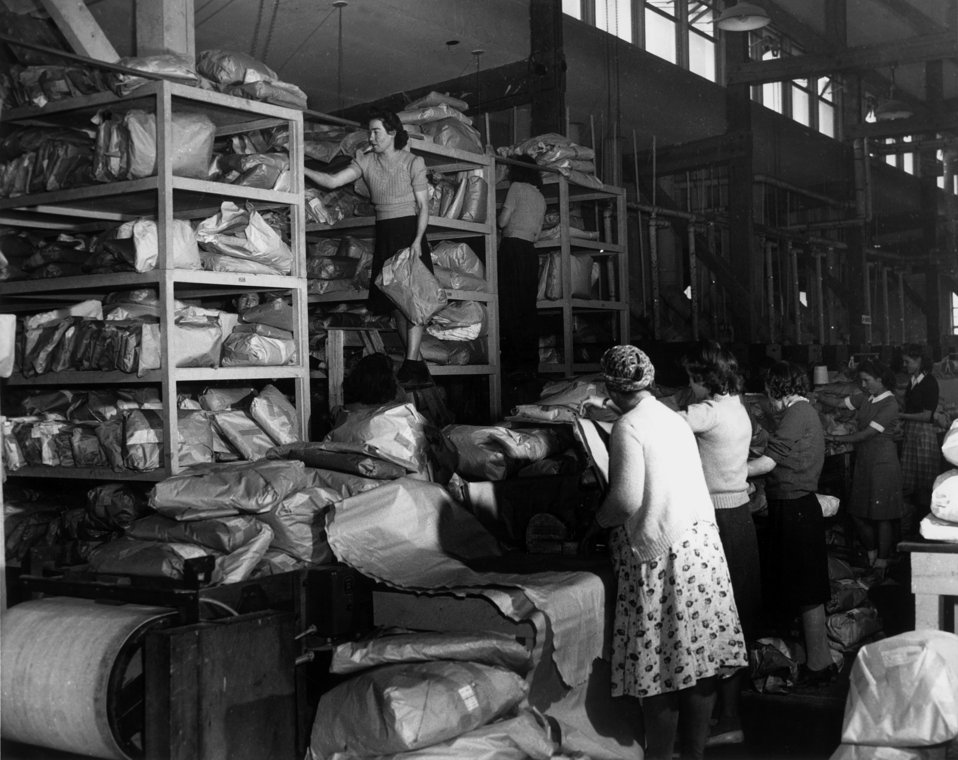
Laundry #2 Interior Oak Ridge

PRO206 DOE photo Ed Westcott

Laundry #2 Interior Oak Ridge Tennessee 1-3-1945